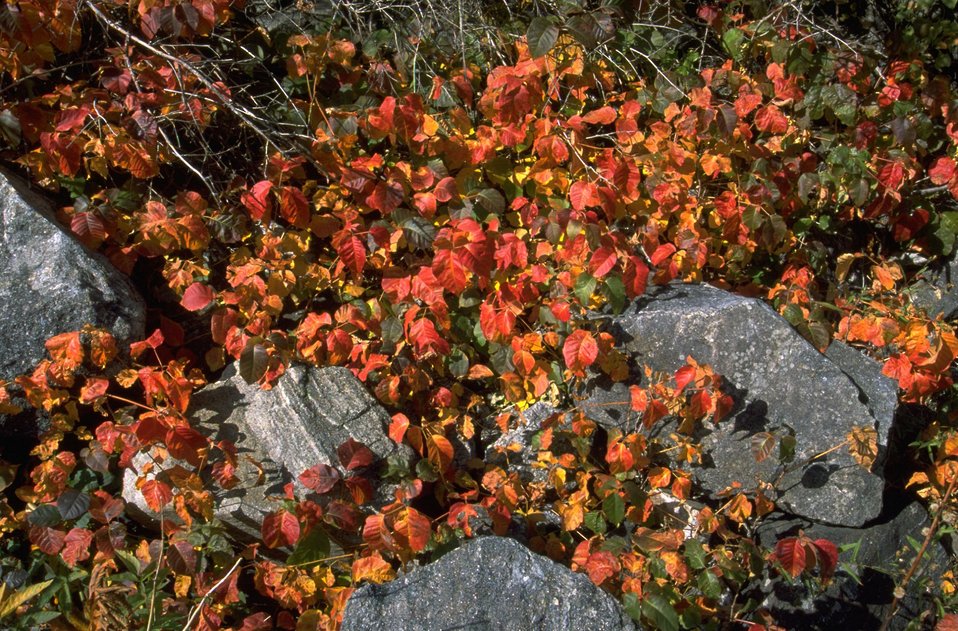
Poison Ivy next to Madison River